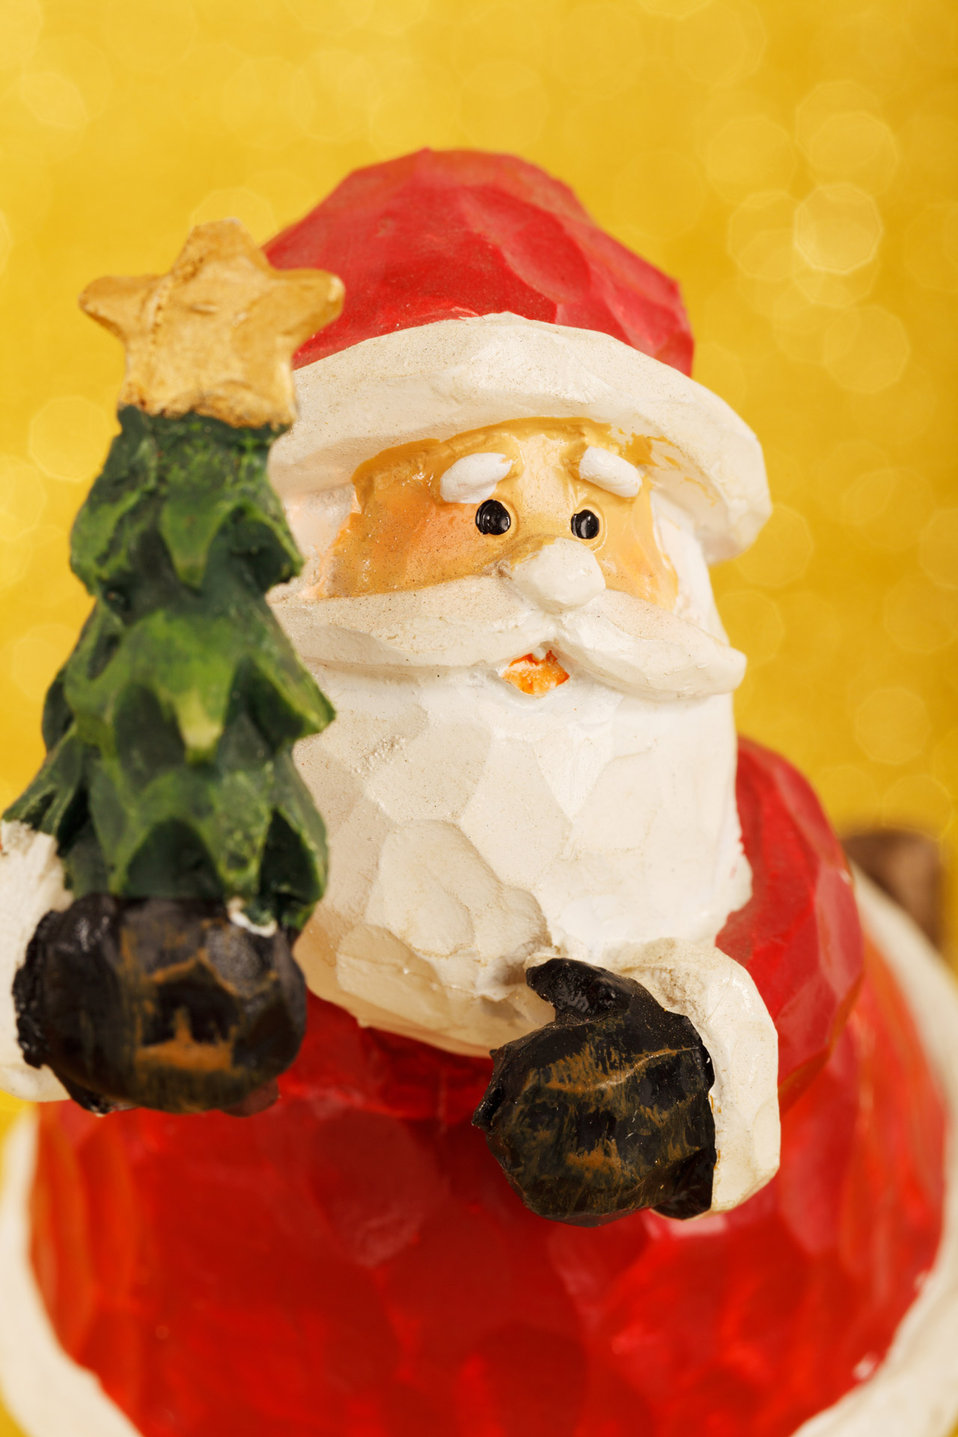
Santa claus and christmas tree

Santa claus carrying a little christmas tree.